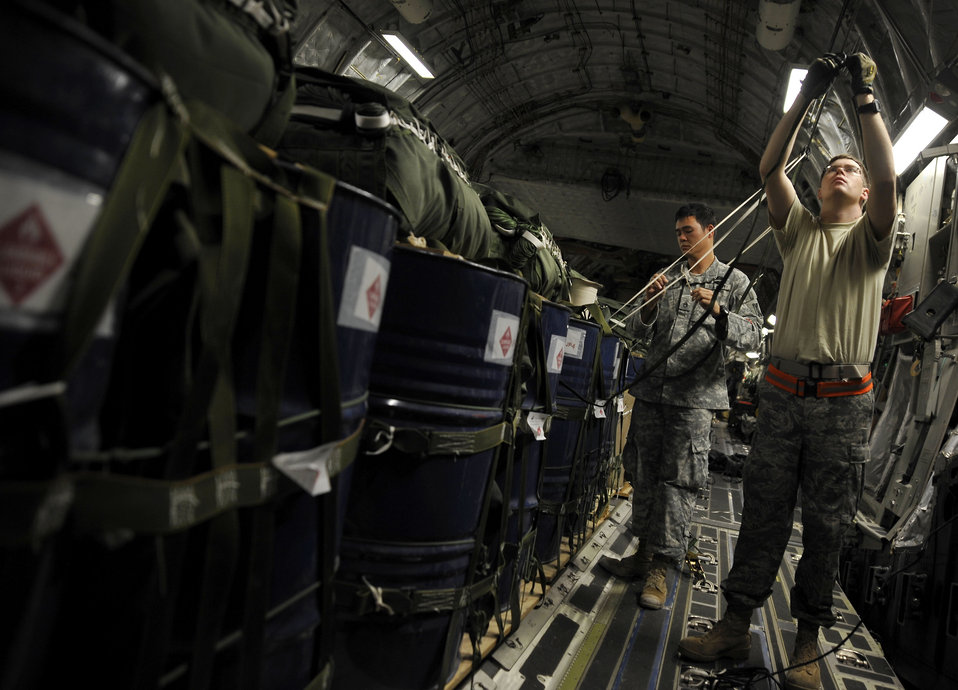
Airmen, Soldiers airdrop supplies to Afghanistan

Staff Sgt. Marcos Ohler, 816th Expeditionary Airlift Squadron loadmaster, helps U.S. Army Staff Sgt. Michael Sharp, 824th Quartermaster Company Detachment 8 parachute rigger, prepare parachutes in a C-17 Globemaster III, Jan. 9, 2010, at an air base in Southwest Asia. The aircrew will airdrop the container delivery system bundles over a drop zone in Afghanistan to support U.S. ground forces.